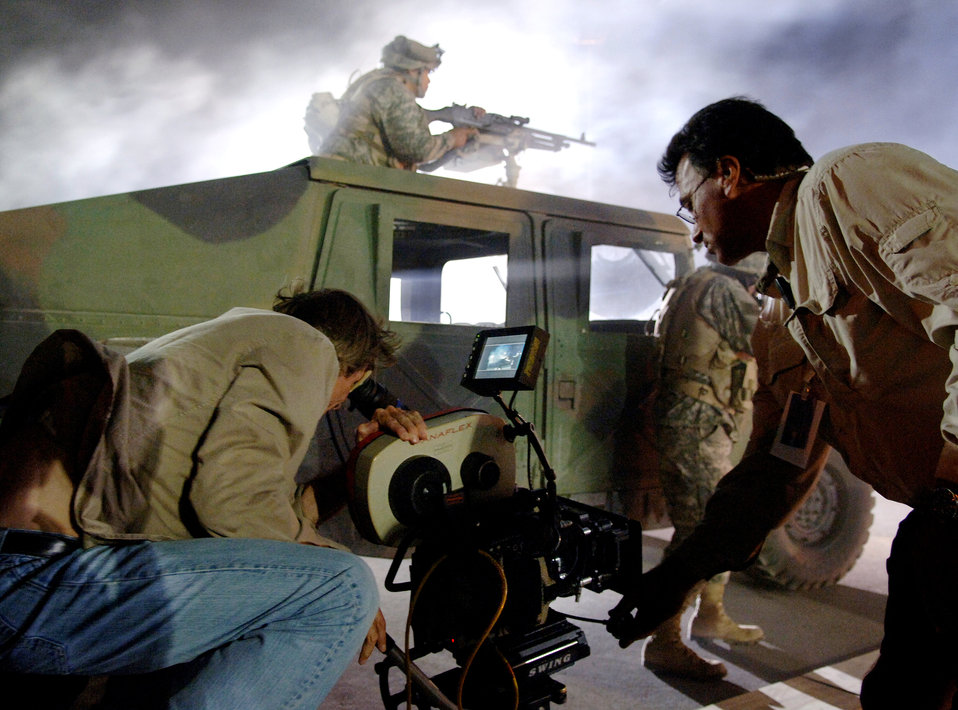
From Holloman to Hollywood, Transformers make movie magic

Movie director Michael Bay films an Airman on the set of the movie